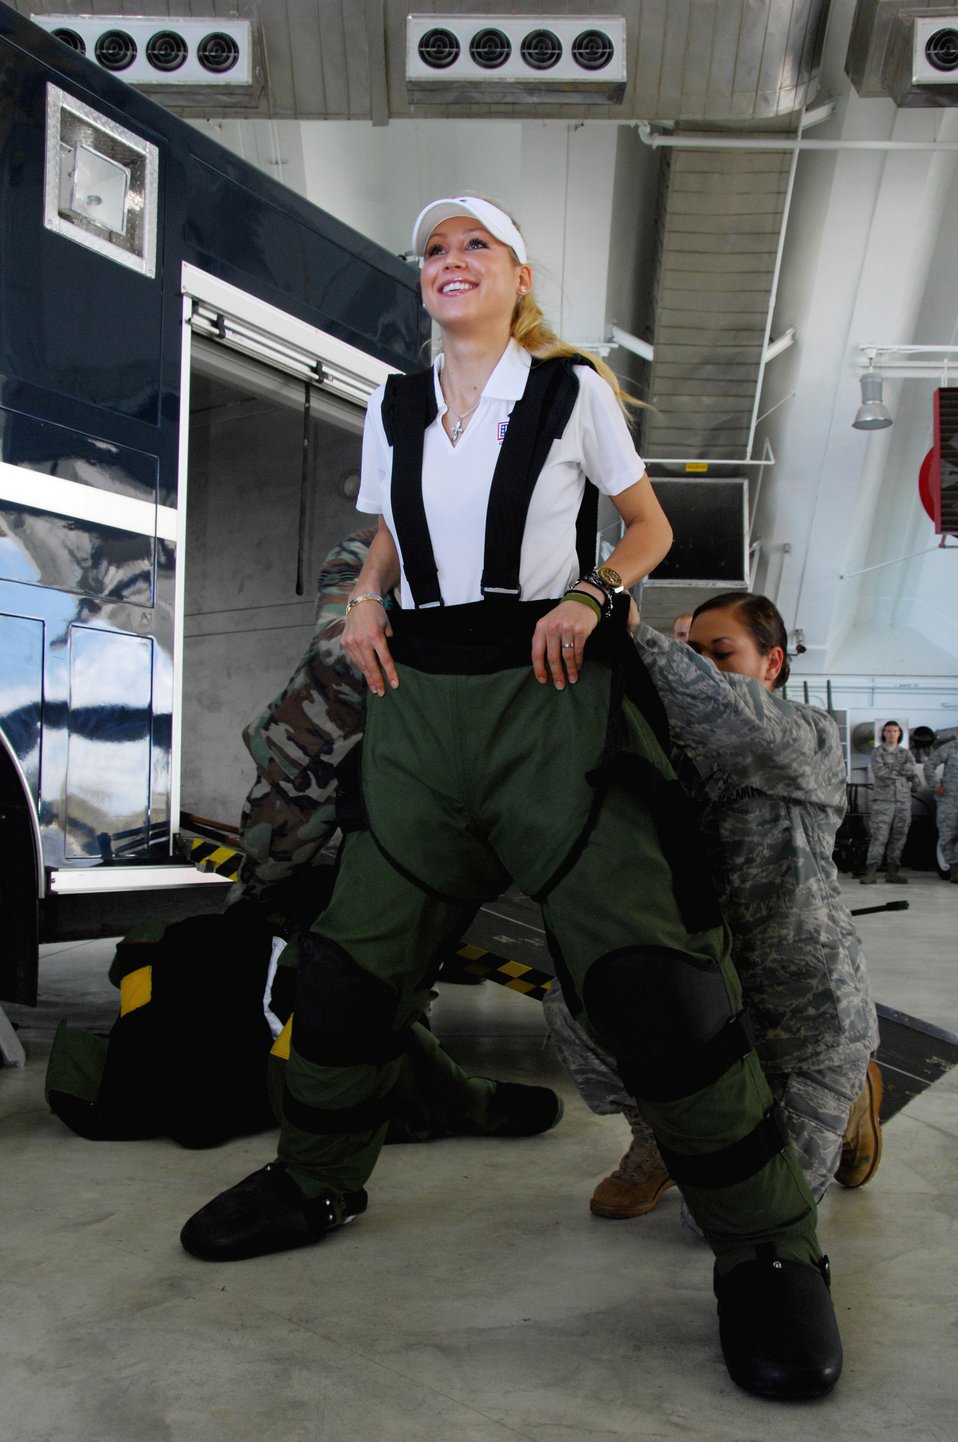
Anna Kournikova visits Andersen

Staff Sgt. Sherri Streu helps Anna Kournikova put on an explosive ordnance disposal bombsuit at Andersen Air Force Base, Guam. Her tour was sponsored by the United Service Organizations to boost morale of servicemembers on Guam. The bombsuit is used by EOD members to prevent injuries and even death during the disposal of explosive ordnances. Sergeant Streu is assigned to the 36th Civil Engineer Squadron.